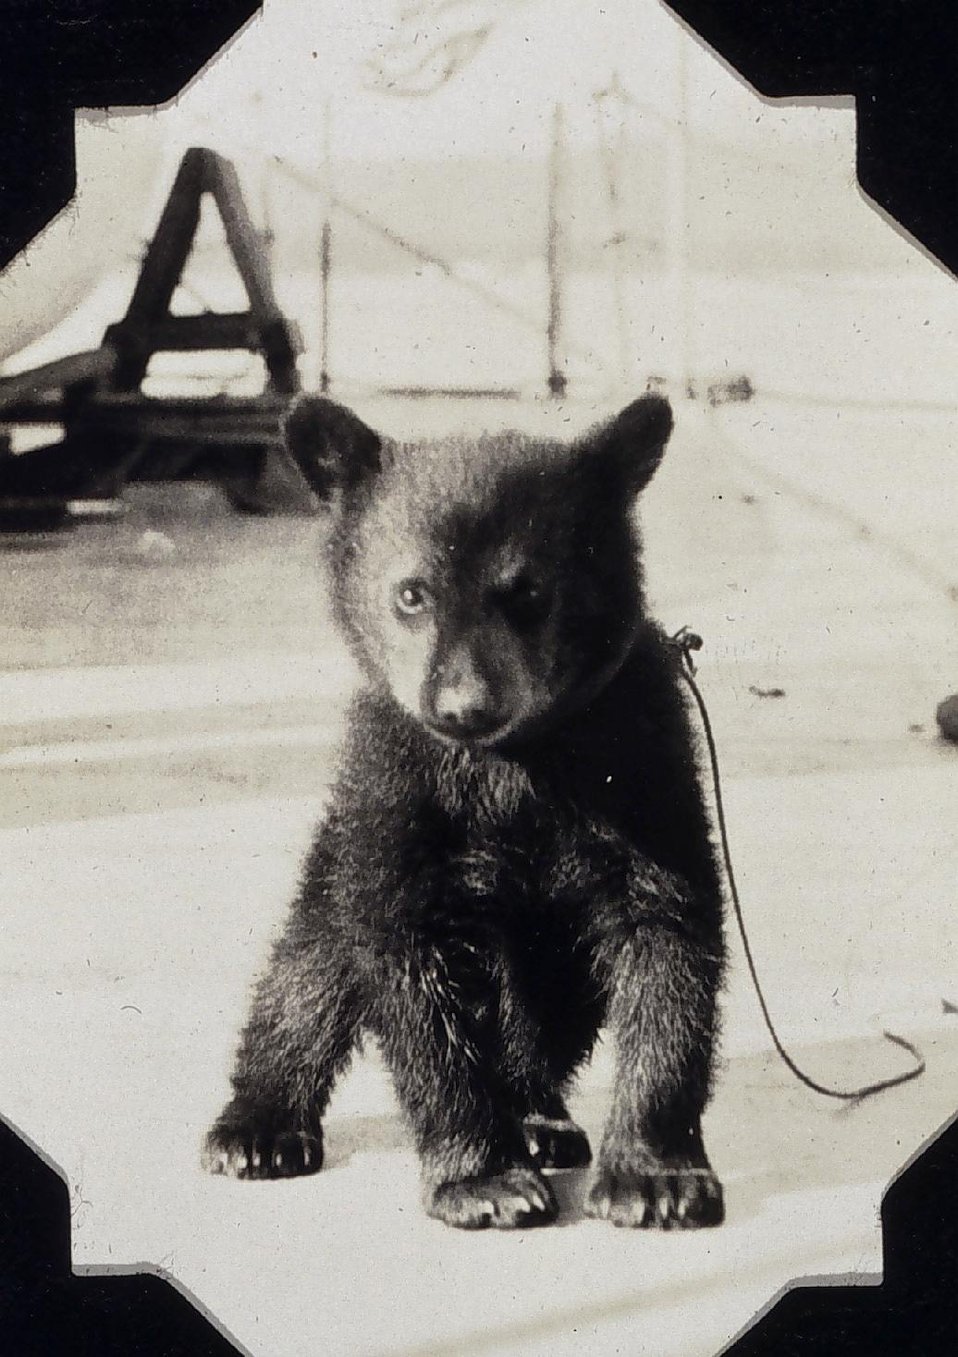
Black bear cub on the SURVEYOR. Made a pet but fell off ship during storm.